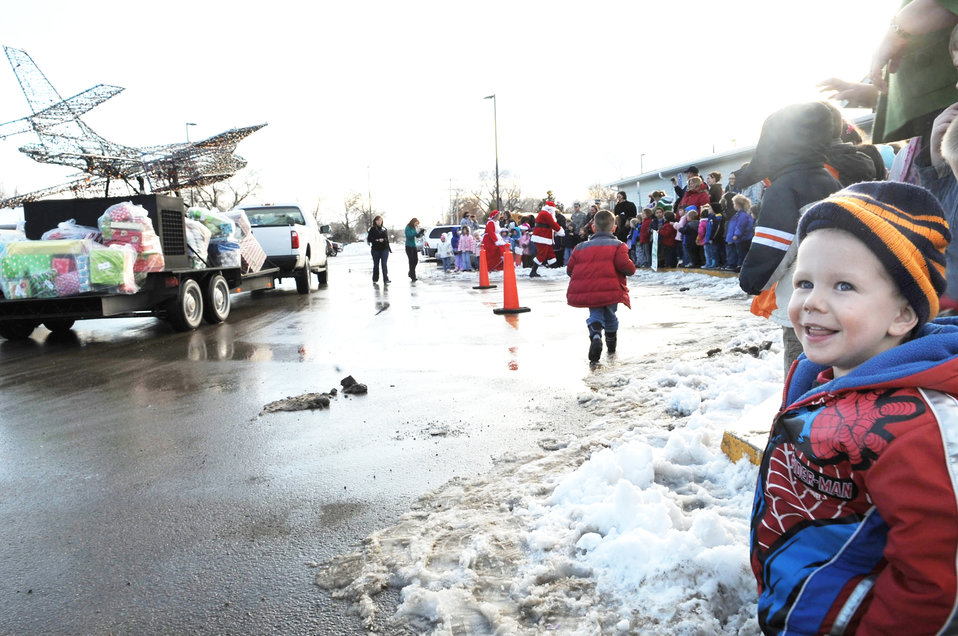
Ellsworth members support Angel Tree program

A child smiles in excitement as he sees presents, Santa and Mrs. Claus at the Youth and Family Services child care center Dec. 17, 2009, in Rapid City, S.D. This is the third time Santa, Mrs. Claus and Airmen from Ellsworth Air Force Base, S.D., bought, wrapped and delivered gifts for every child at the center.